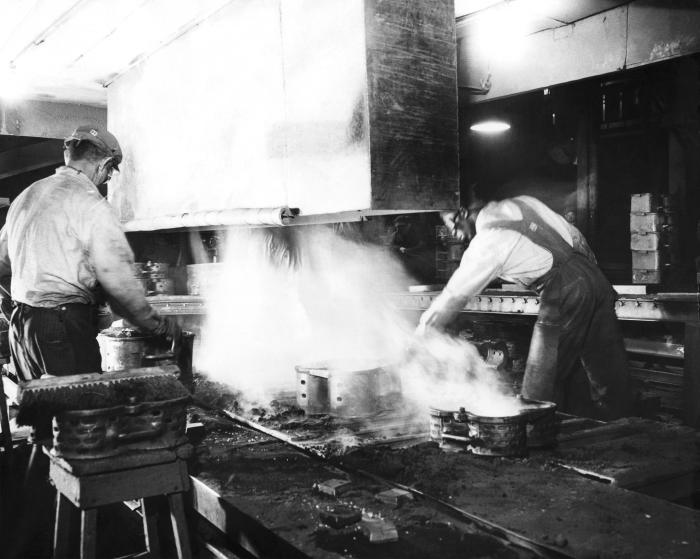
This historical photograph, provided by the Center for Disease Control's (CDC), National Institute for Occupational Safety and Health (NIOSH), depicted a number of foundry workers using a shake-out table during an unidentified manufacturing process. Note how the expelled gasses are drawn off, and up into the suctioned air current of an overhead ventilation unit. It was not known whether of not the fumes were toxic, but note that none of the workers were wearing filtered breathing masks, or protective goggles.